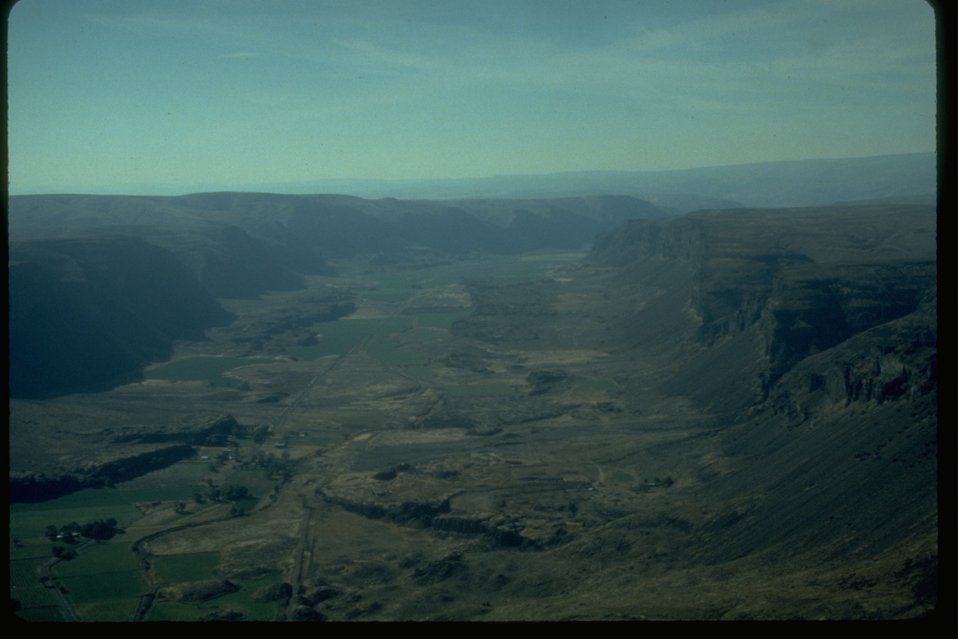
Arial view of Moses Coulee in Grant County, Washington.